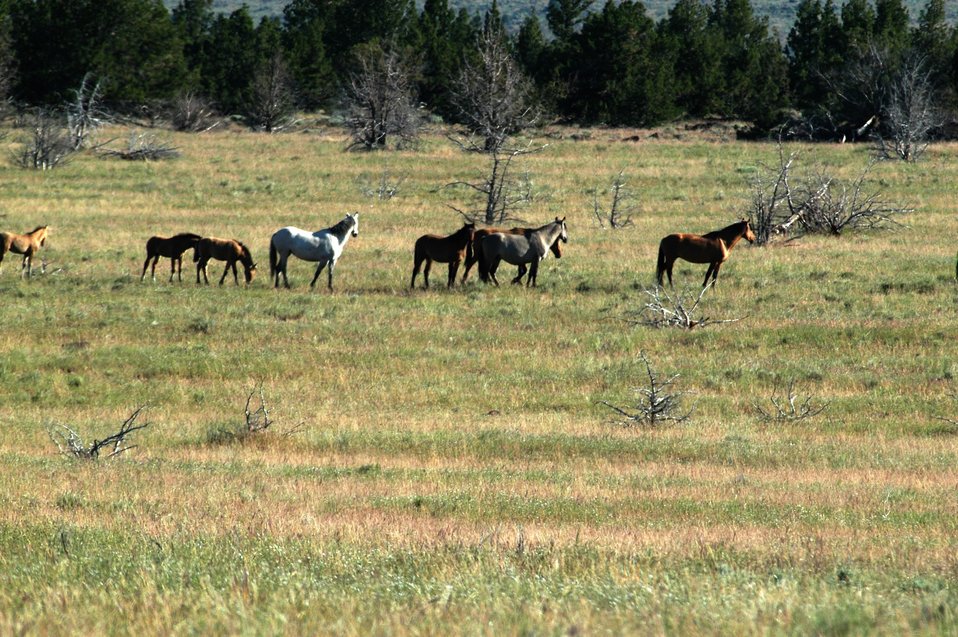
Kiger horses roam the plateaus of the Kiger Wildhorse Herd Management Area near Steens Mountain in Southeastern Oregon.